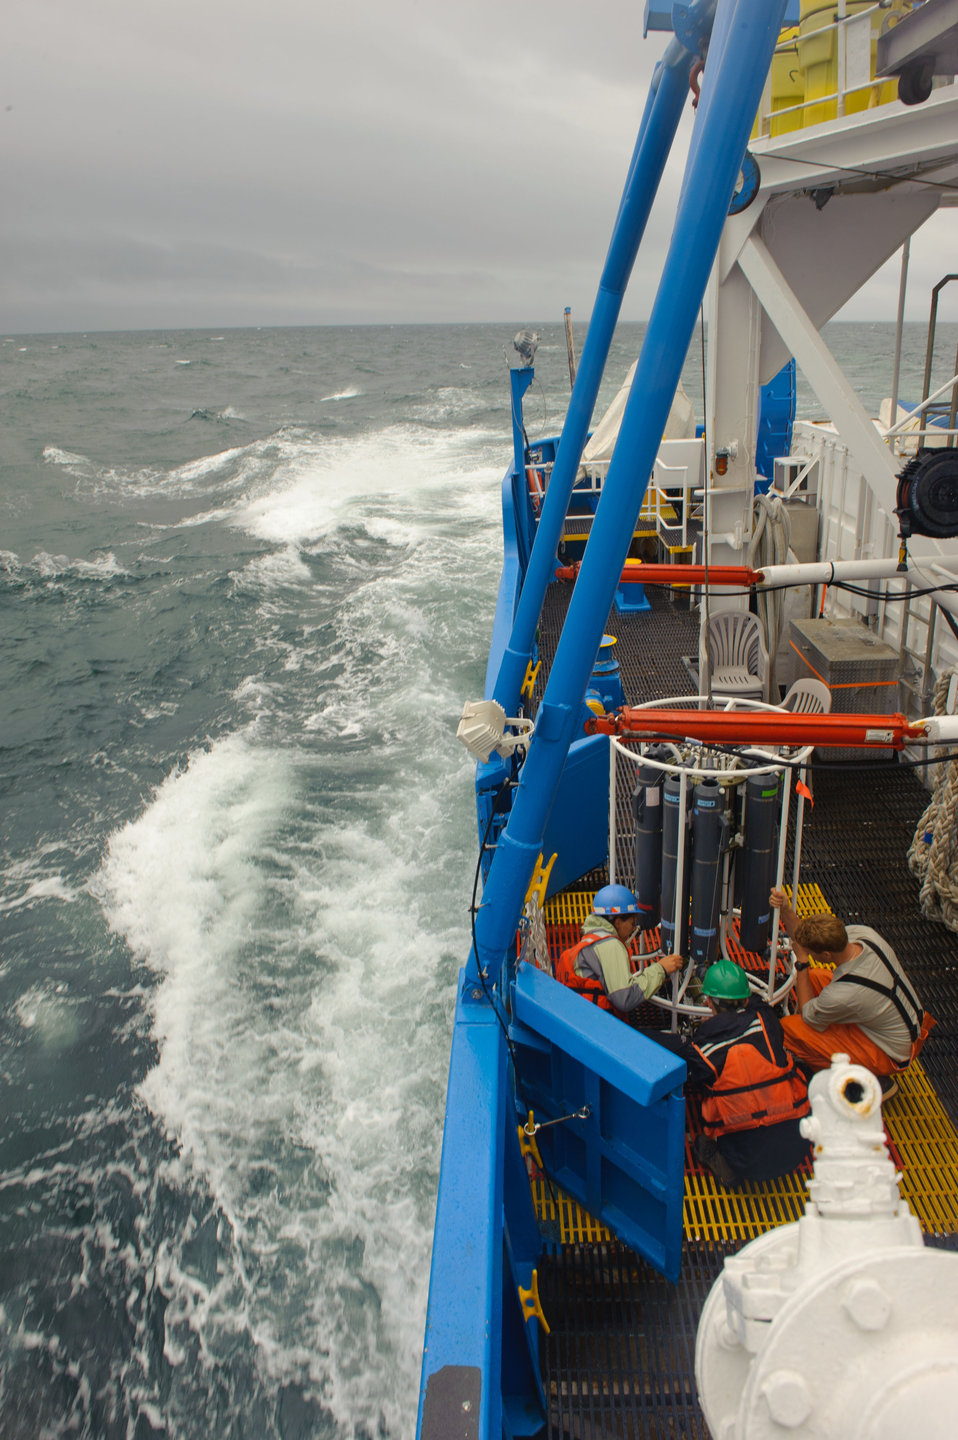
August 7, 2011 Preparing the CTD and water sampler for the next station

Once we have collected the water we need the larger bottles have to be emptied and prepped for the next station. On longer hauls between stops we rinse the CTD with fresh water.

On deck, we open the bottles manually with clips, from the dry lab one level up they can remotely trip the bottles to close at the depths they need.